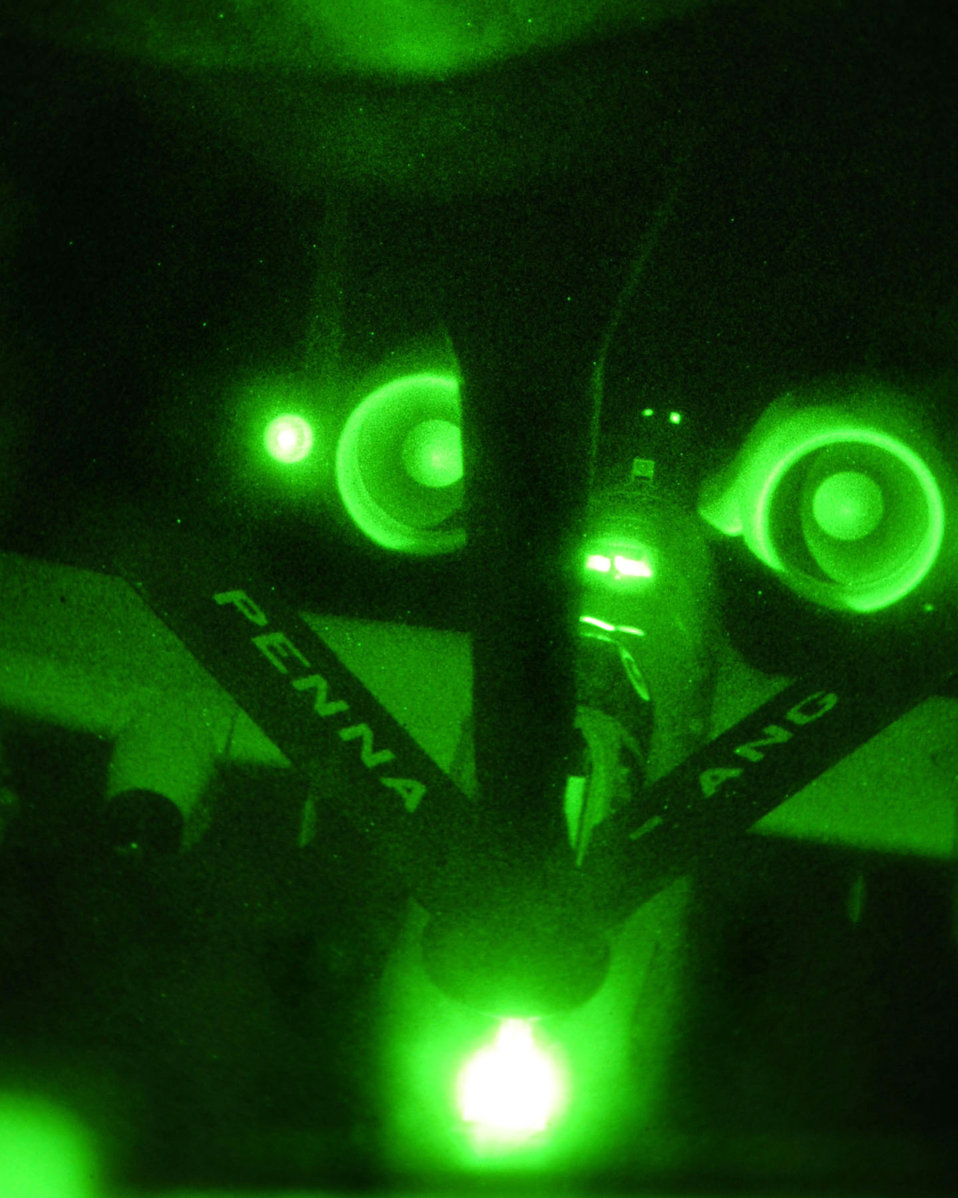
A-10 qualification

1st Lt. Dan Griffin, a pilot from the 358th Fighter Squadron at Davis-Monthan Air Force Base, Ariz., positions his A-10C Thunderbolt II beneath the boom of a KC-135 Stratotanker July 22, 2010. His aircraft will receive 2,000 pounds of fuel during this night aerial refueling mission over Southern Arizona July 22. Lieutenant Griffin is a student in the A-10C Pilot Initial Qualification course and was one of six pilots from his squadron to refuel during this mission. Upon completion of the course in August he will become a fully qualified A-10C attack pilot.